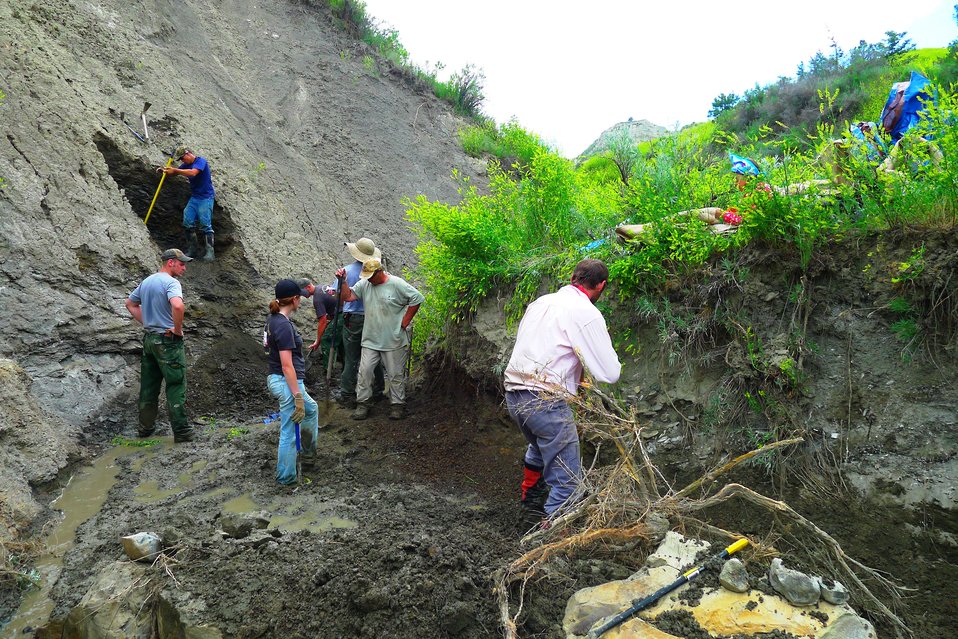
Dirty Work

Everyone working hard to move the dirt and keeping the creek flowing, which was a constant challenge. Paleontology can be pretty dirty work.